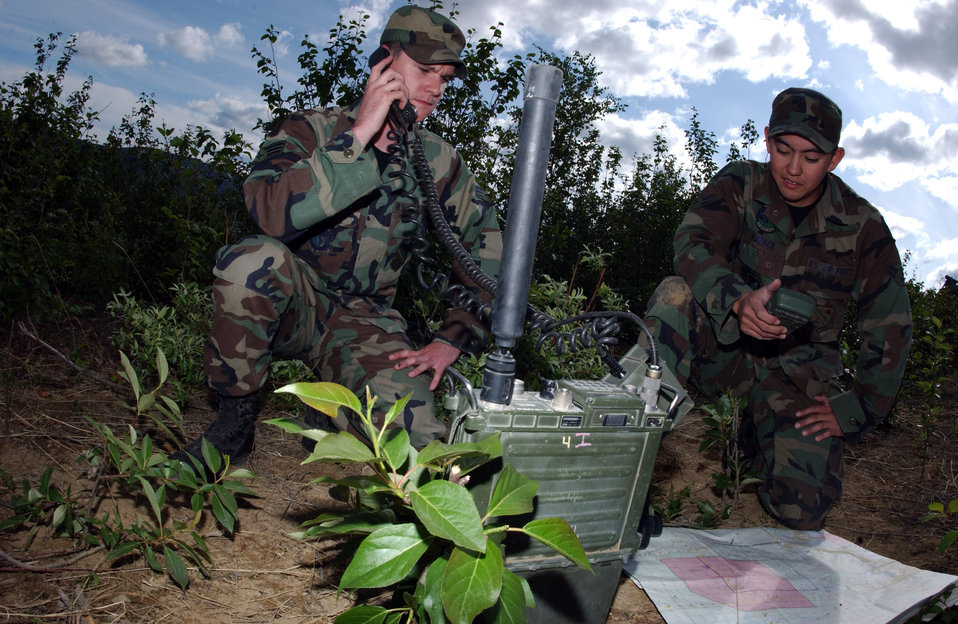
Air to ground power

Senior Airman John Tranum uses a PRC-117 multiband tactical radio to communicate with aircraft while Airman 1st Class Steve Vonack uses a PSN-13 defense advance GPS receiver to mark the target locations during an exercise May 29 on the Pacific Alaska Range Complex in Alaska. Airmen Tranum and Vonack are assigned to the 3rd Air Support Operations Squadron tactical air control party from Fort Wainwright, Alaska. 3rd ASOS members coordinate, request, and control close air support, theater airlift, and reconnaissance.